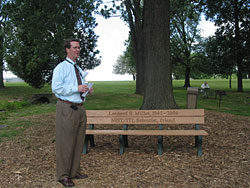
Leonard Miller's bench

Jim St. Pierre dedicates Leonard Miller's Memorial Bench.